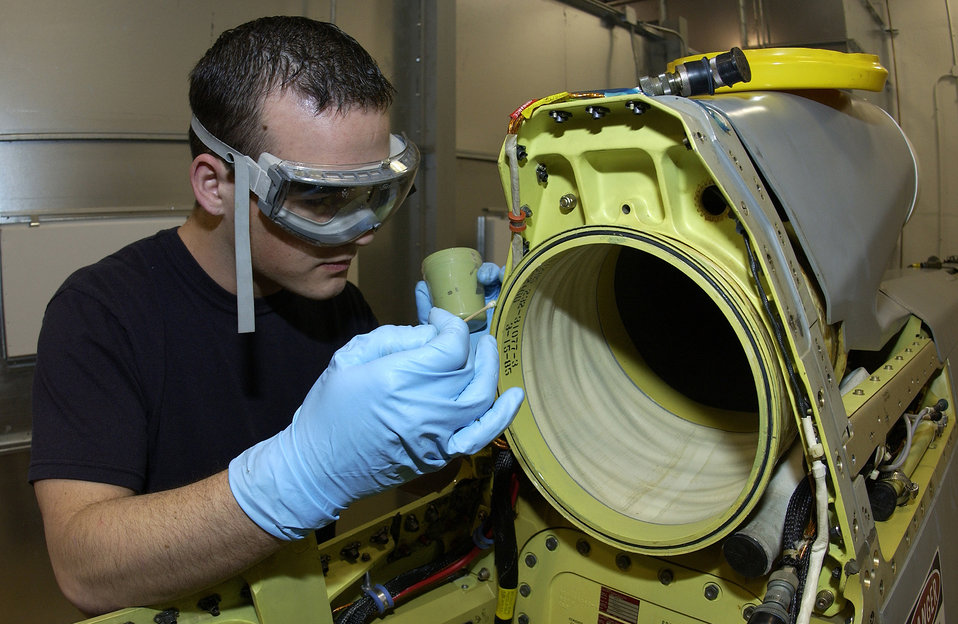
Airman installs new missile engine

BARKSDALE AIR FORCE BASE, La. -- Airman 1st Class Derek Eitl prepares to install an engine on an AGM-86 conventional air-launched cruise missile here recently. The Airman is a missile maintenance apprentice with the 2nd Munitions Squadron.